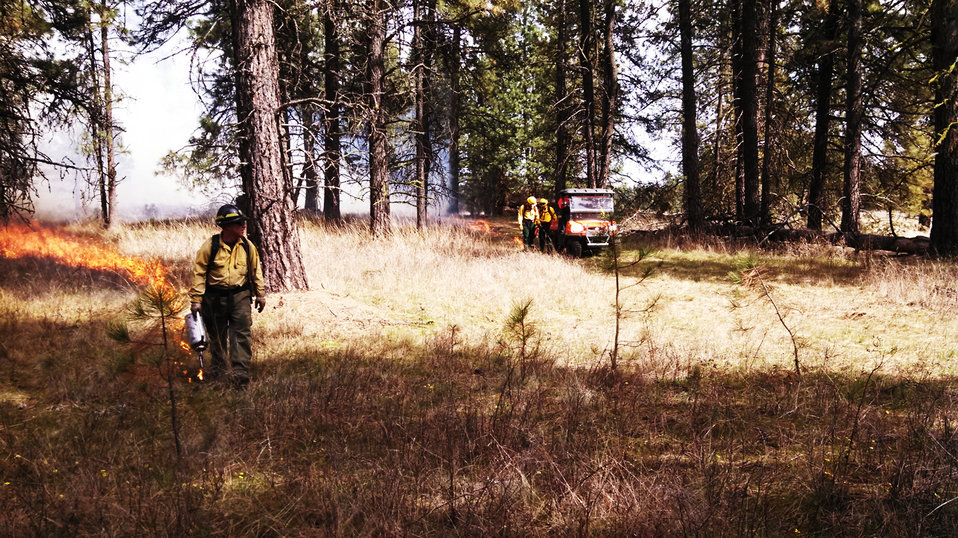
40-acre Prescribed Burn

Here, federal and city cooperators light a portion of the burn unit and control flames near the project boundary, using an all-terrain utility vehicle with a water tank.